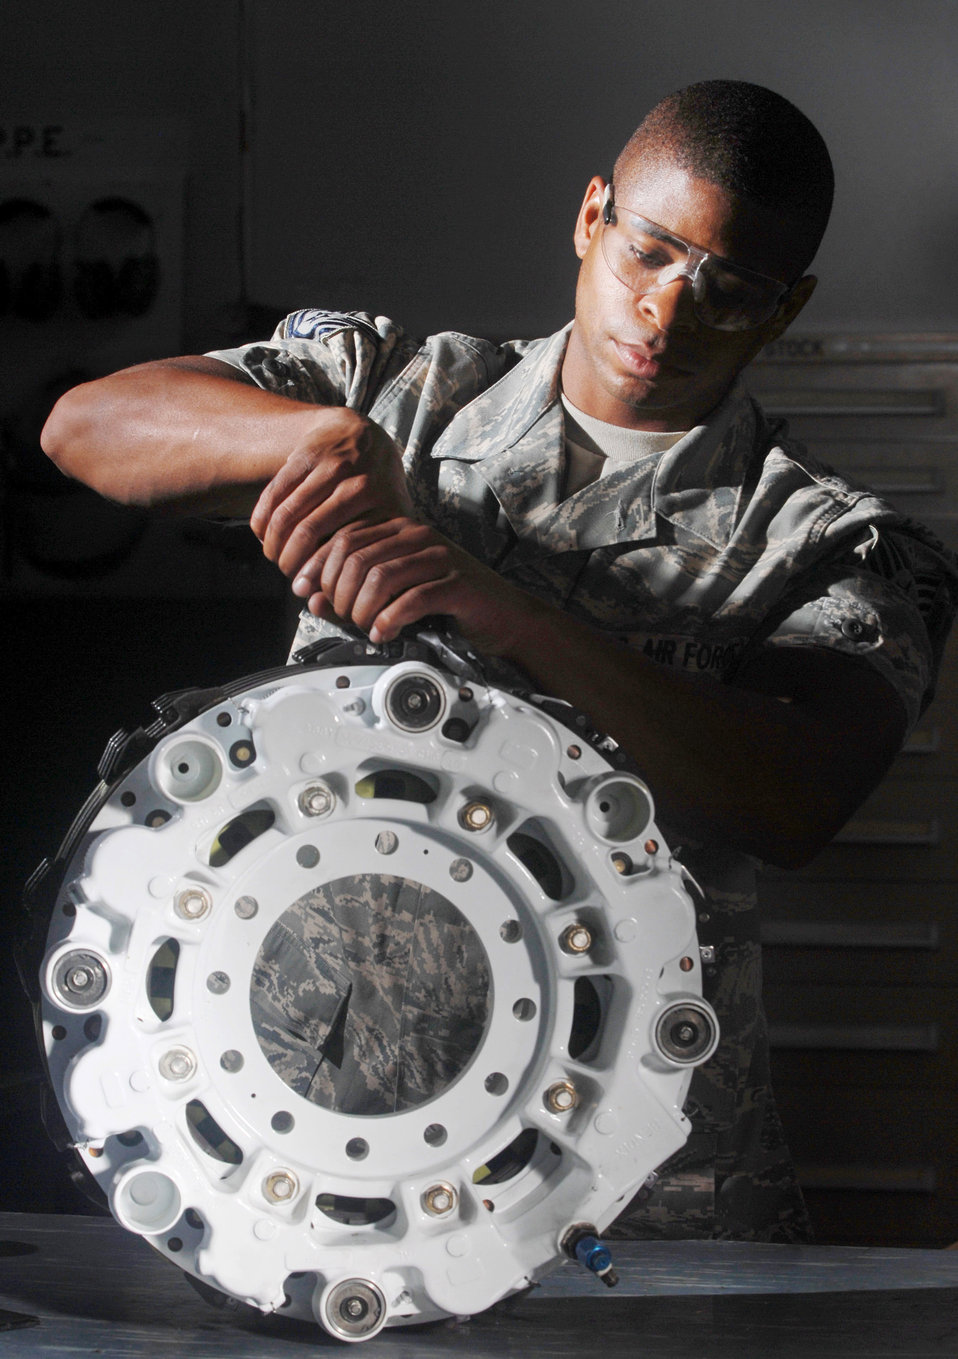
Tighten up

Tech. Sgt. Alan L. Scott uses a pair of pliers to attach safety wire to pistons on KC-135 Stratotanker refueling aircraft brake assembly July 30 at March Air Reserve Base, Calif. March ARB, located in Southern California, is home to the largest air mobility wing in the Air Force Reserve Command. It is also home to units from the Army Reserve, Navy Reserve, Marine Corps Reserve and Air National Guard. Sergeant Scott is a pneudraulics technician from the 452nd Maintenance Squadron.